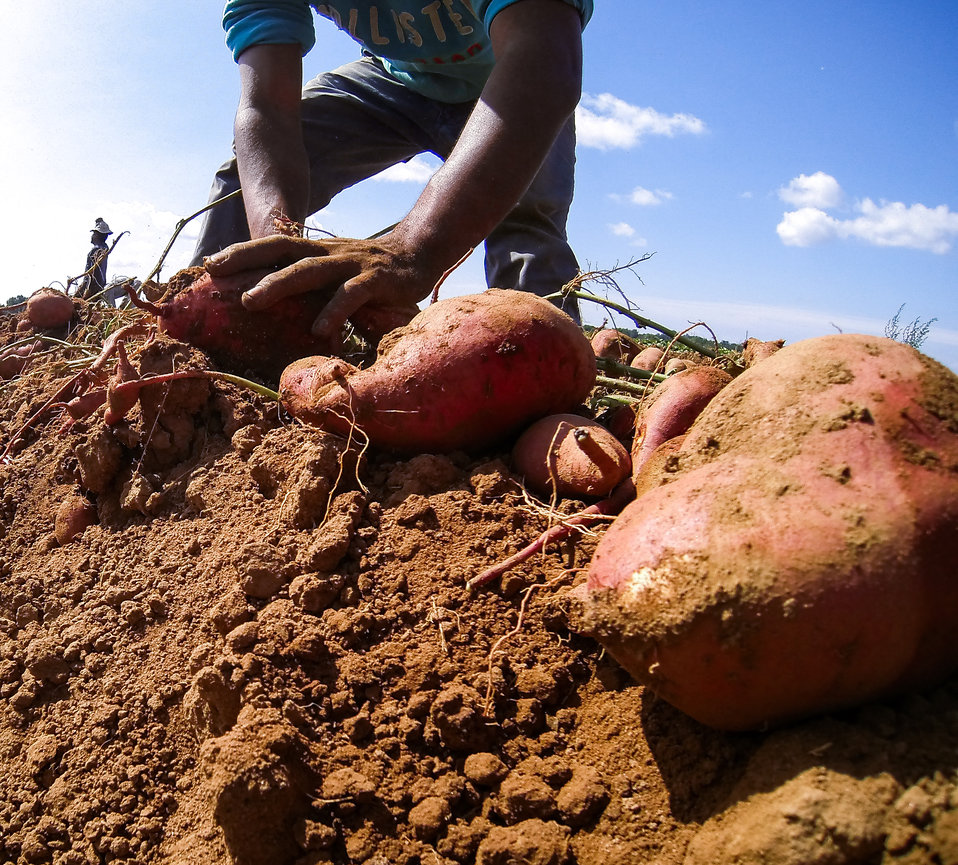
Migrant workers pick, separate, and process sweet potatoes at Kirby Farms in Mechanicsville, VA on Friday, Sept. 20, 2013. 200 acres of the farm are devoted to eggplant, spinach, beets, tomato, jalapeno peppers, melons and a variety of greens. Soybeans and small grain are grown on the remaining 300 acres. Using rotational crop practices allows Kirby Farms to double and triple crop yields. Wholesalers, who buy from this farm, sell the produce to major supermarkets in the Mid-Atlantic region, from North Carolina to Maryland. Restaurants in the local area prepare and serve the local bought produce to patrons in the Richmond, VA metropolitan area.